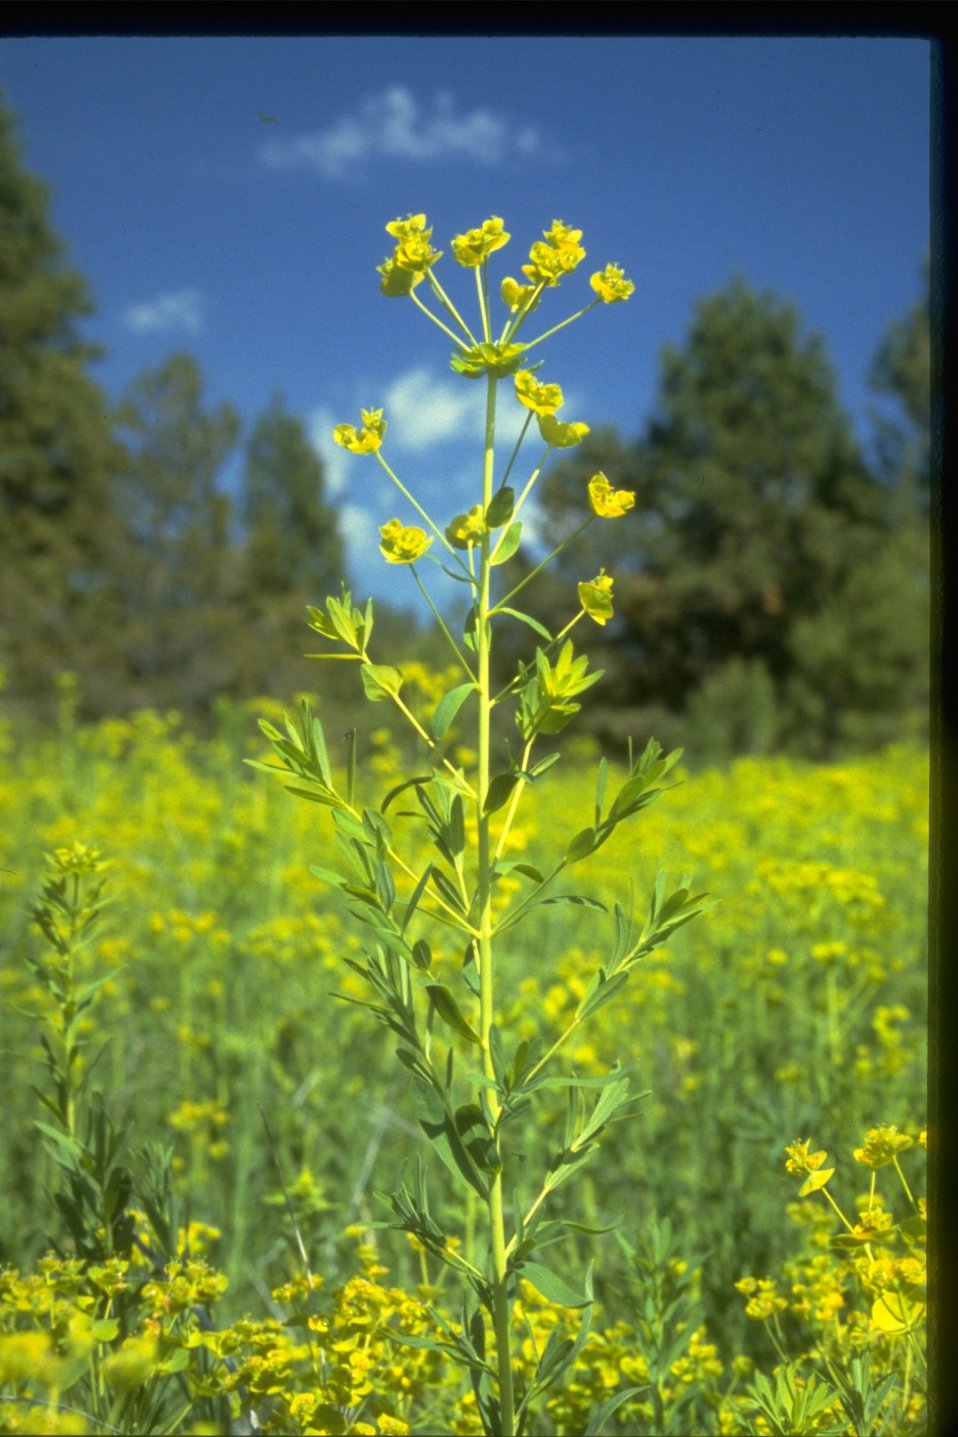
Single plant of leafy spurge.